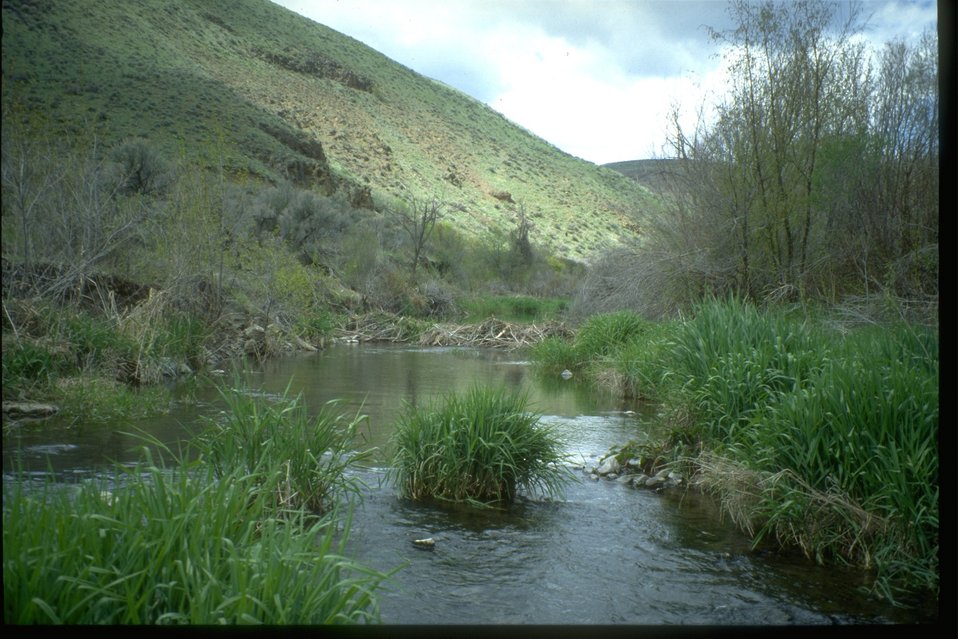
Douglas Creek above a beaver dam in Douglas County, WA.